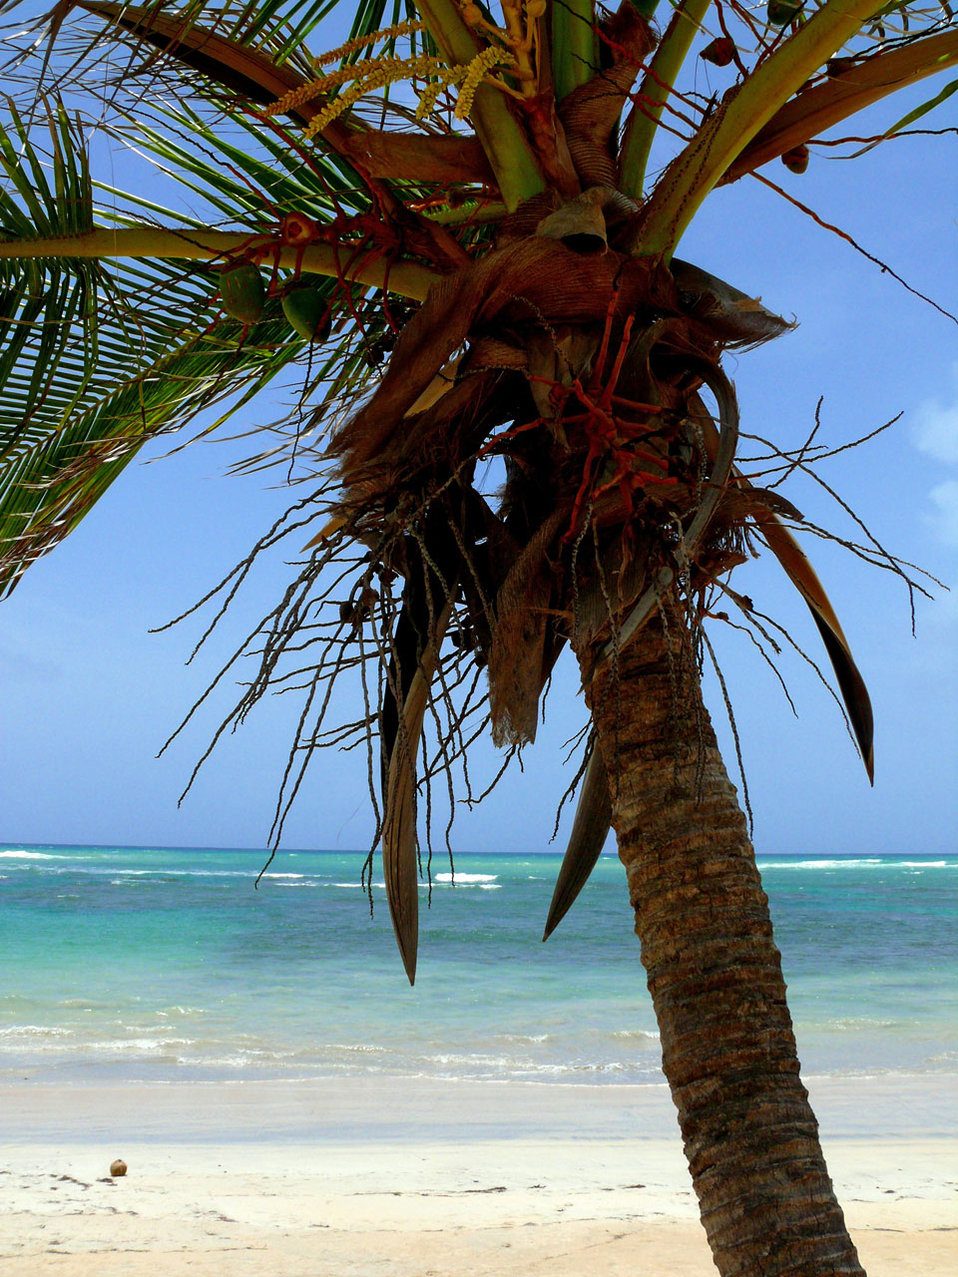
Palm tree on the beach.